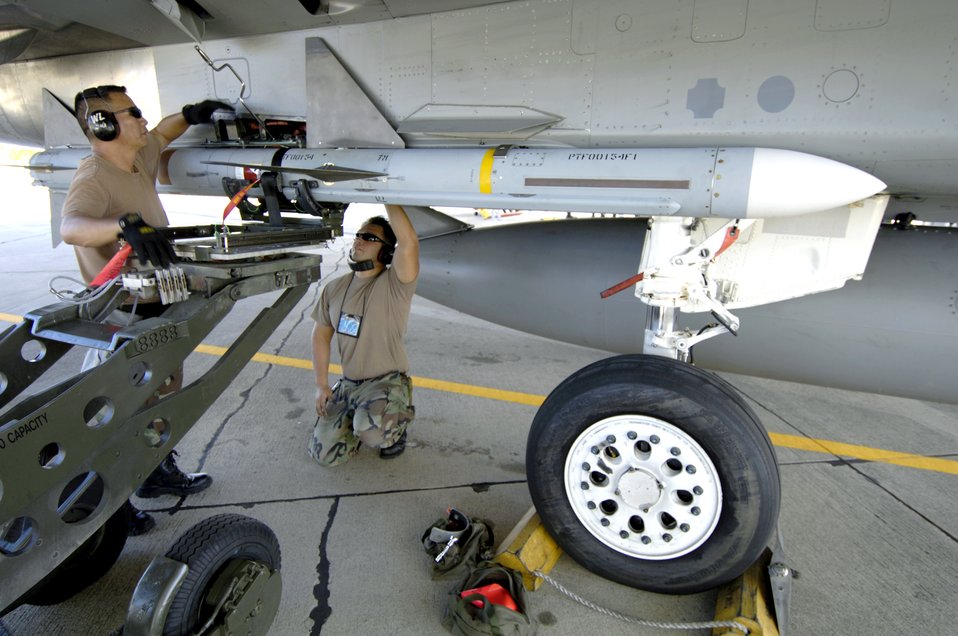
Total force at work in RIMPAC

Staff Sgt. Arthur Hamabata and Staff Sgt. Gabriel Coronado load an AIM-7 Sparrow missile on an F-15 Eagle at Hickam Air Force Base, Hawaii, on July 16 during the Rim of the Pacific Exercise 2006. The Airmen are from the Hawaii Air National Guard's 154th Aircraft Maintenance Squadron.